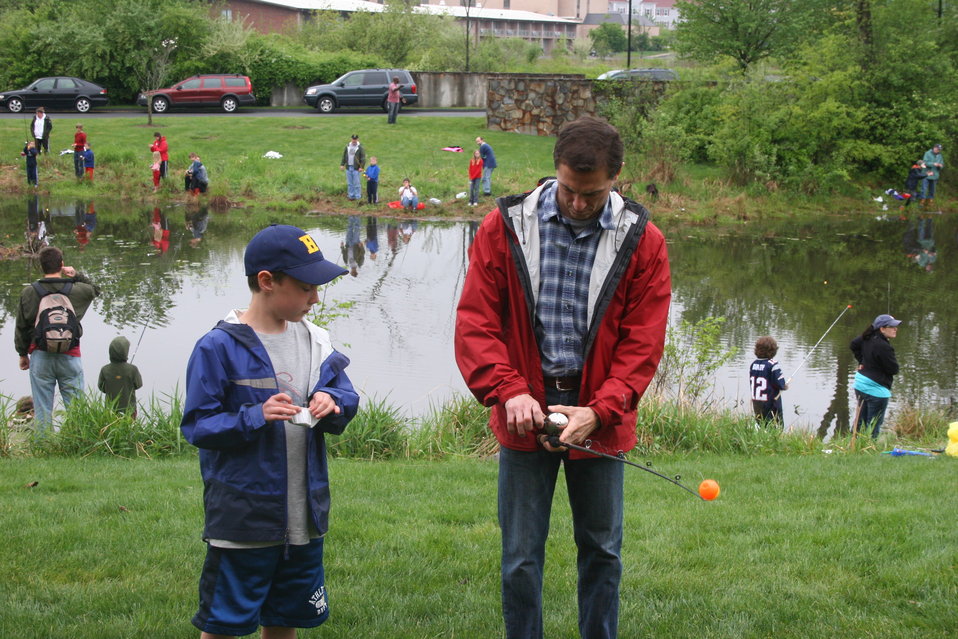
Fishing event at U.S. Fish and Wildlife Service Regional Office in Hadley, MA